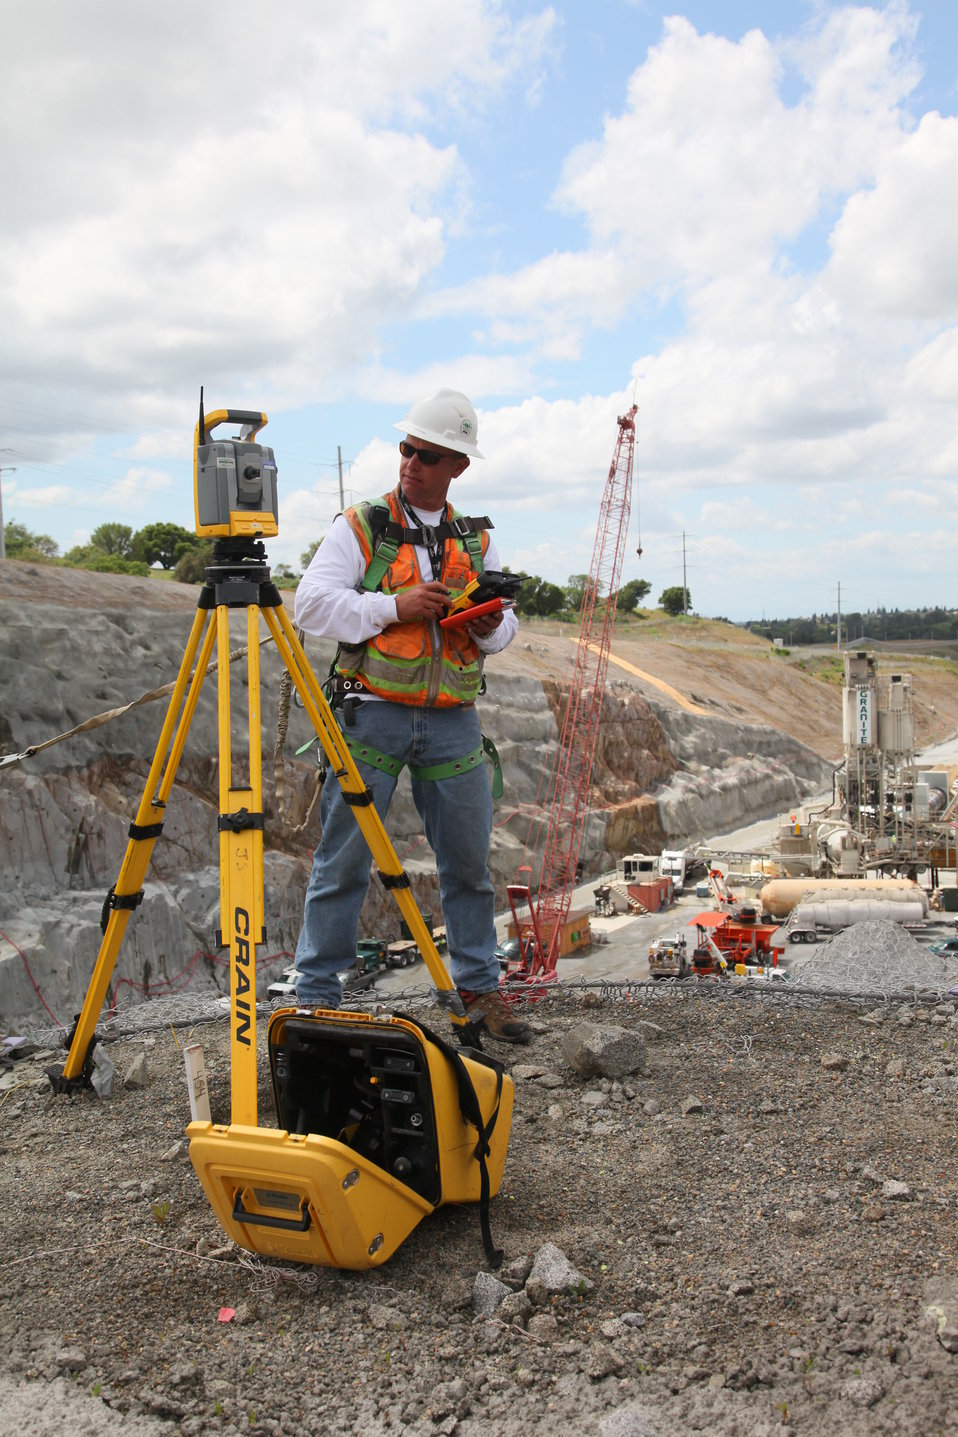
Surveying for crane placement at the Folsom JFP auxiliary spillway

A surveyor, contracted by the U.S. Army Corps of Engineers Sacramento District, works atop of the excavation site for the auxiliary spillway for the Folsom Dam in Folsom, Calif., April 26, 2012. The surveyor was creating points for accurate crane placement for upcoming concrete construction of the spillway in May. The Sacramento District has shifted its focus to construction of the spillway's control structure, essentially a second dam. The spillway is scheduled to be ready for use in 2017 and will allow Folsom Dam to release water sooner and more safely, helping reduce flood risk for the Sacramento region.